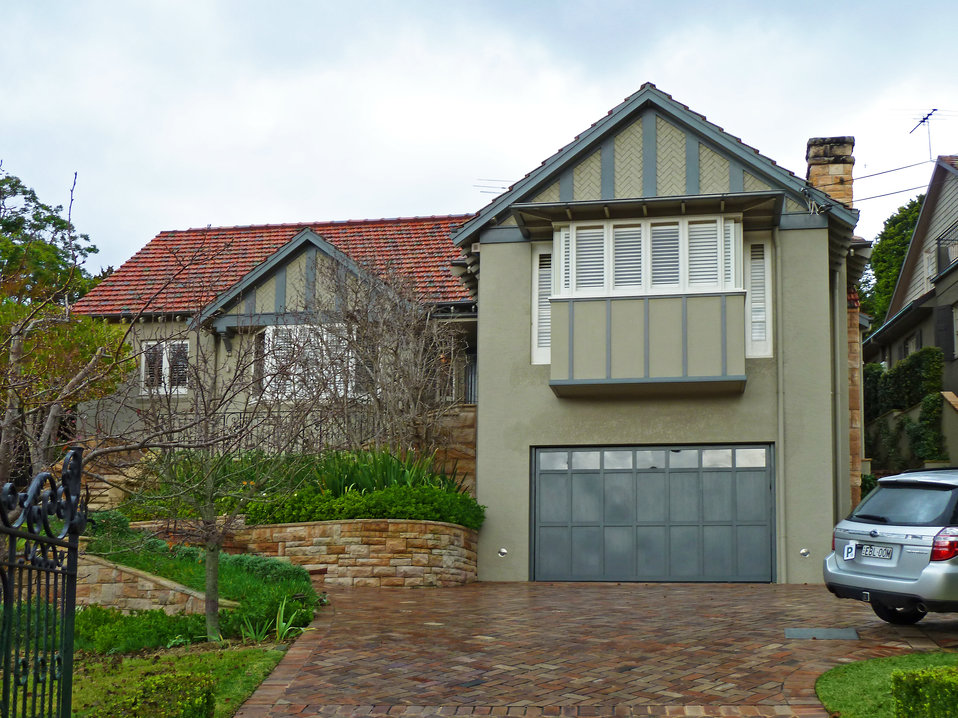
19 Kylie Avenue, Killara, New South Wales, Australia.